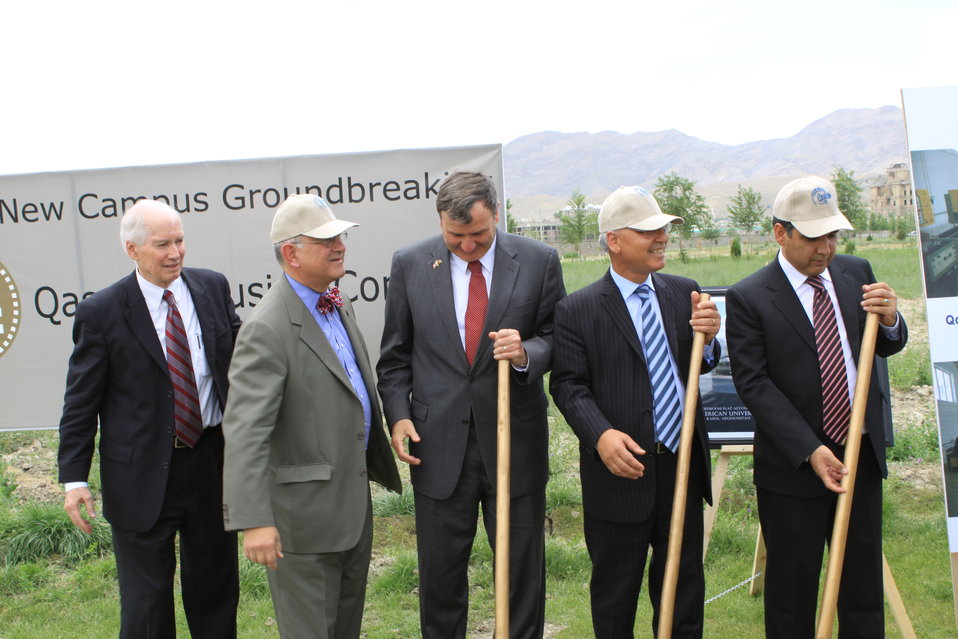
100526 AUAF Graduation 407